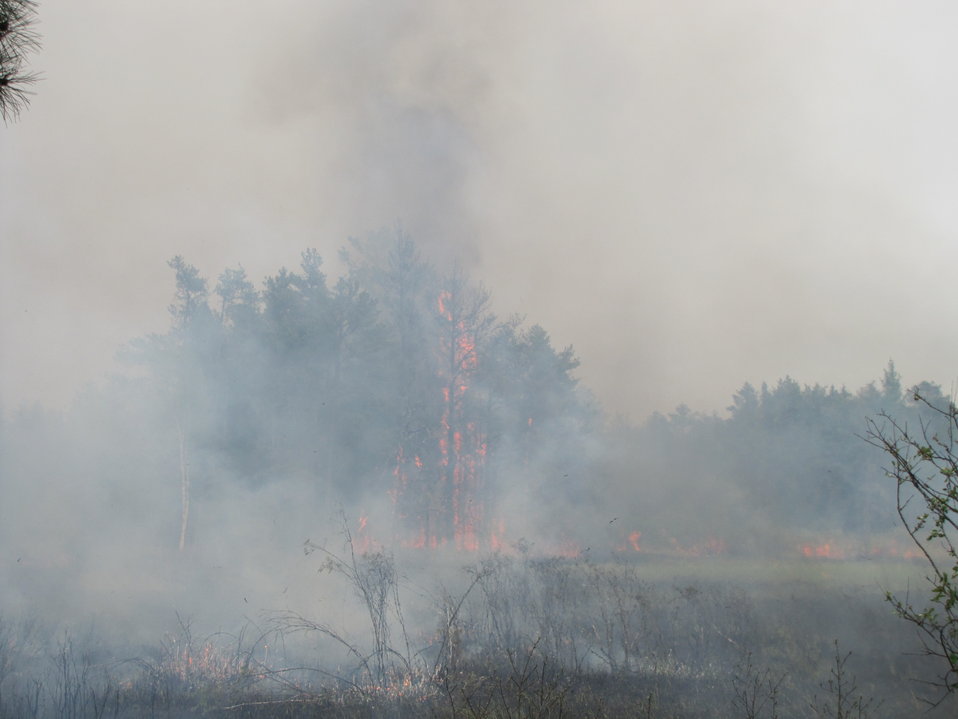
The Back Fire Takes off

Lighting a back fire off Pine Creek Road to keep the main fire contained.